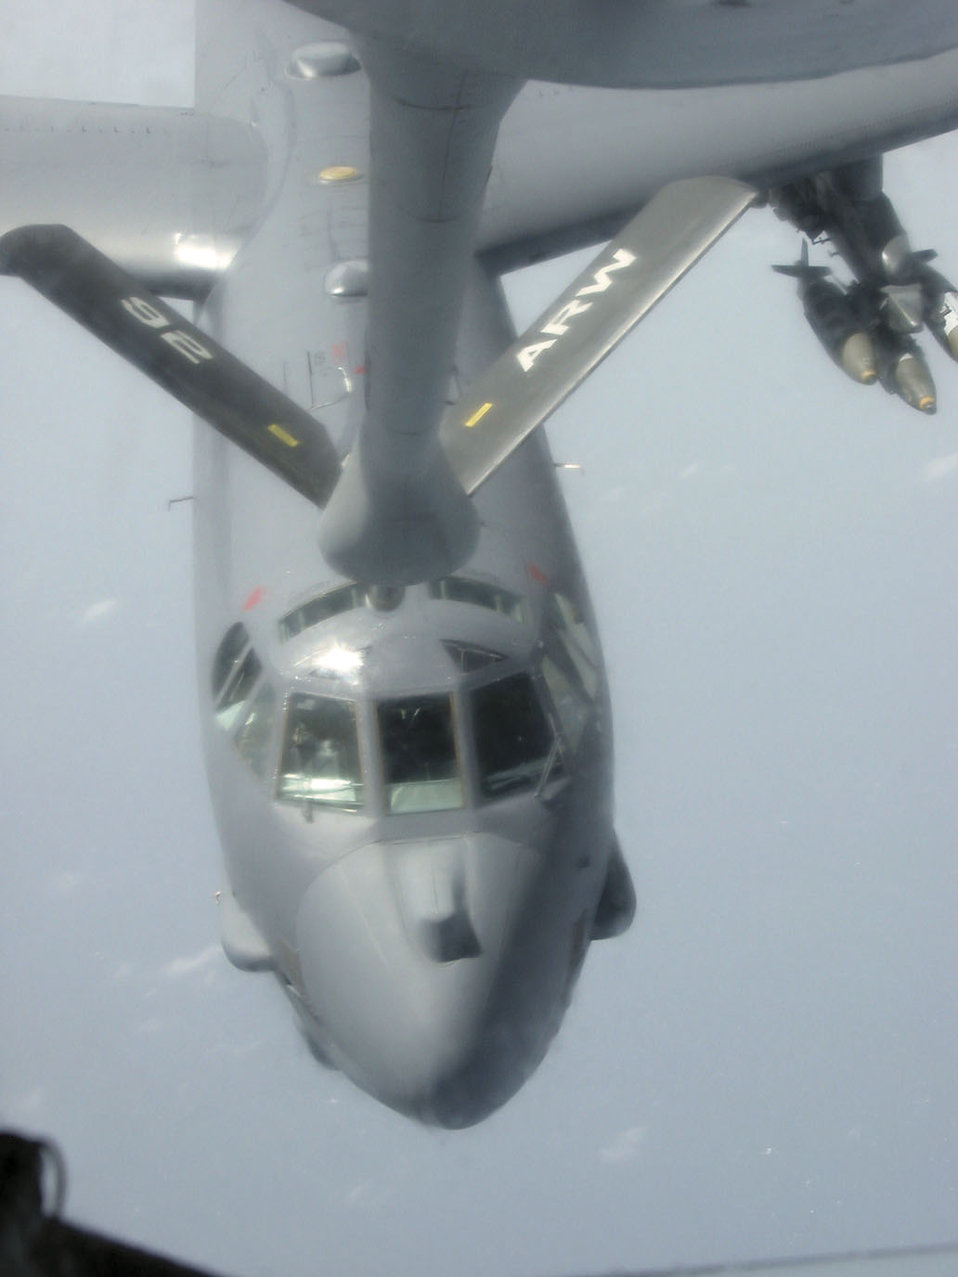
Airmen deliver fuel in flight

SOUTHWEST ASIA -- A B-52 Stratofortress maneuvers into the position for aerial refueling from a 340th Expeditionary Air Refueling Squadron KC-135 Stratotanker.